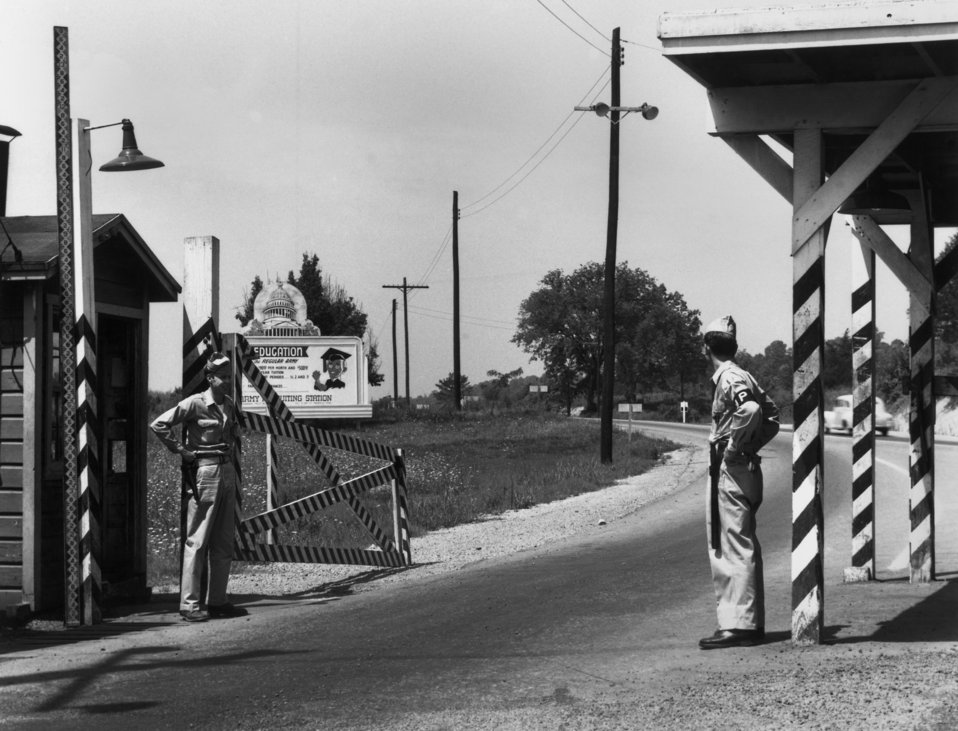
Solway Gate - MP on Duty Oak Ridge

DOE photo Ed Westcott Solway Gate - MP on Duty Oak Ridge Tennessee (1946)